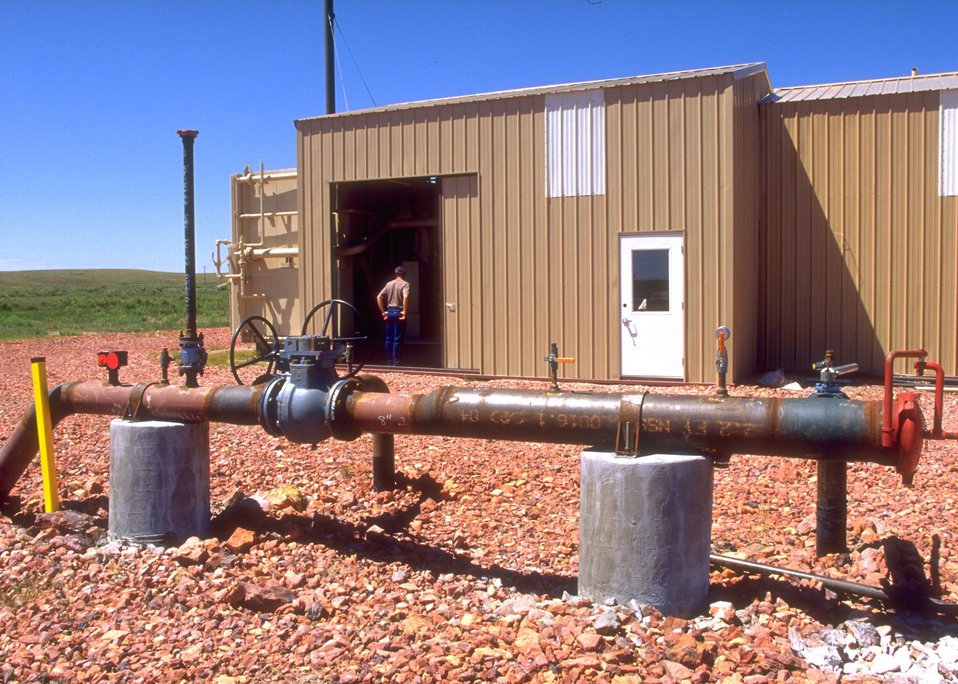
Facilities used in the production of coal bed methane, Buffalo Field Office.